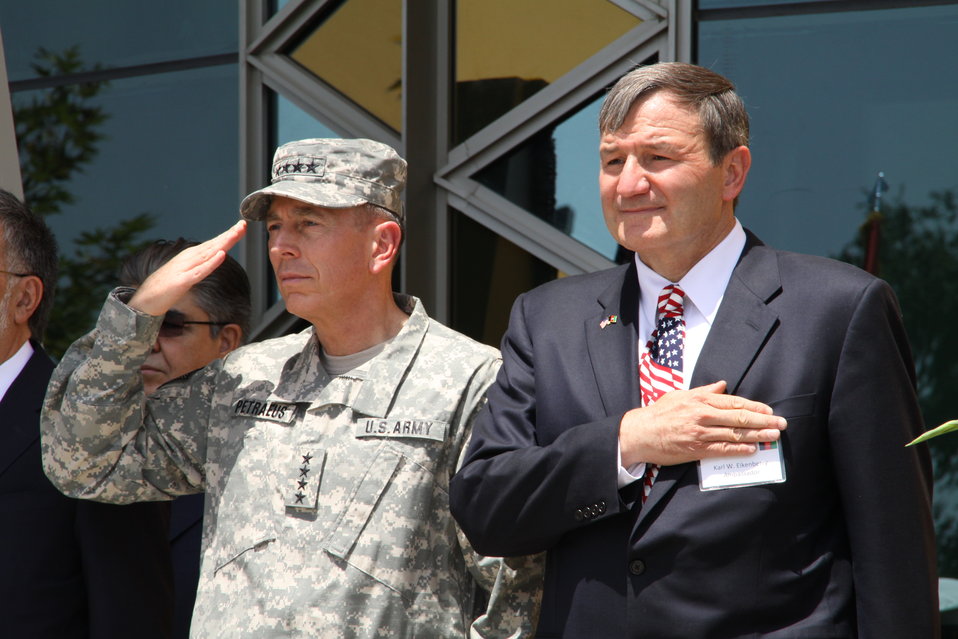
Kabul Official July 4th Celebration